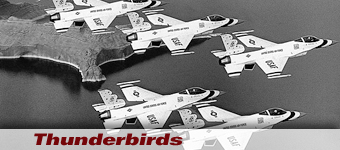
Thunderbirds

U.S. Air Force Thunderbirds history spotlight graphic .